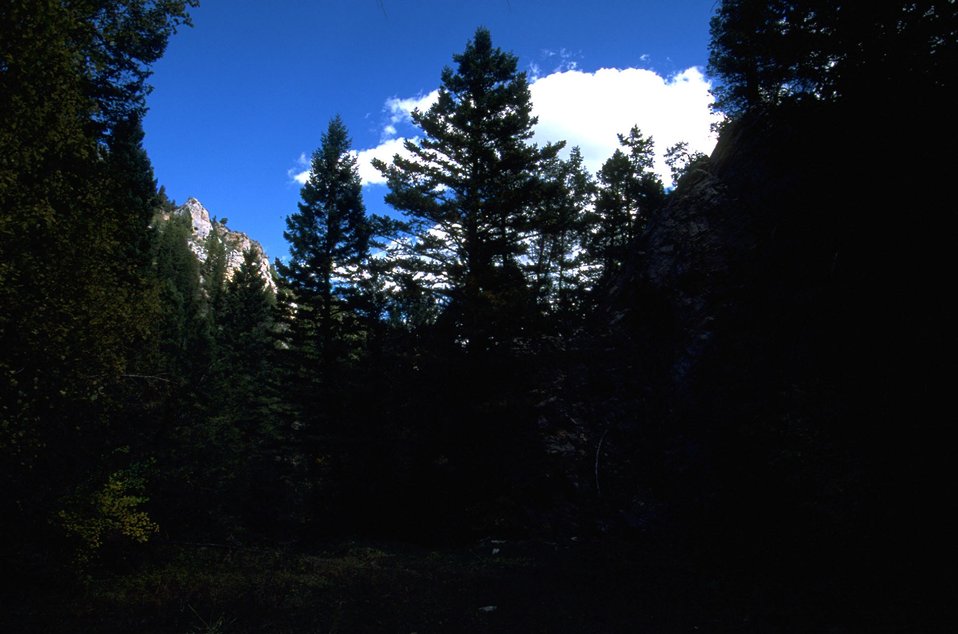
Looking at the sky through a hole in the trees in Lauren Canyon